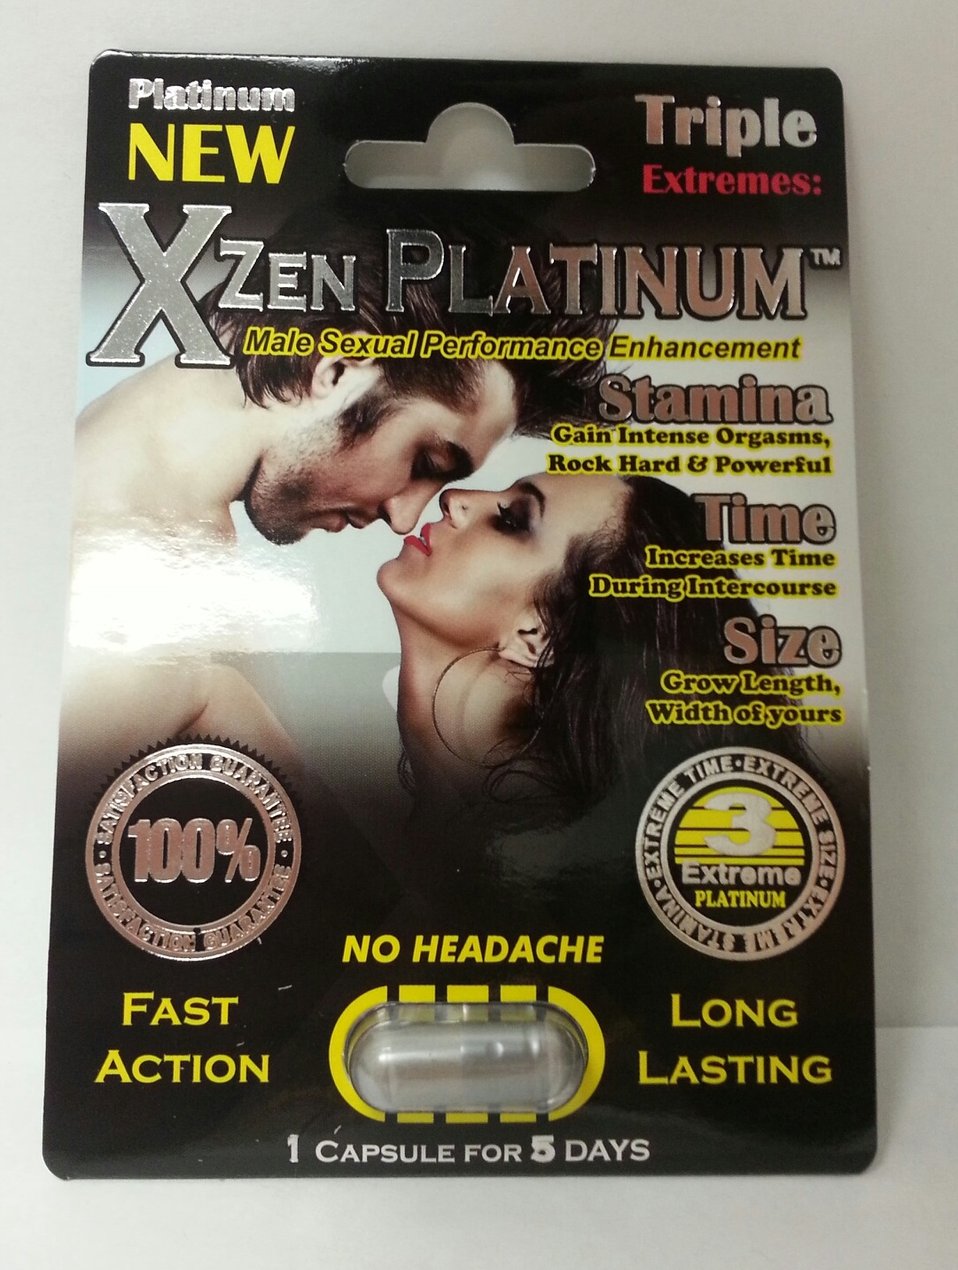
X Zen Platinum

June 10, 2013 - The FDA is advising consumers not to purchase or use 'X Zen Platinum,' a product promoted and sold for sexual enhancement. The product was found to contain undeclared sildenafil and tadalafil. For more information, go to www.fda.gov/Drugs/ResourcesForYou/Consumers/BuyingUsingMe...

And read this Consumer Update: Beware of Fraudulent ‘Dietary Supplements’